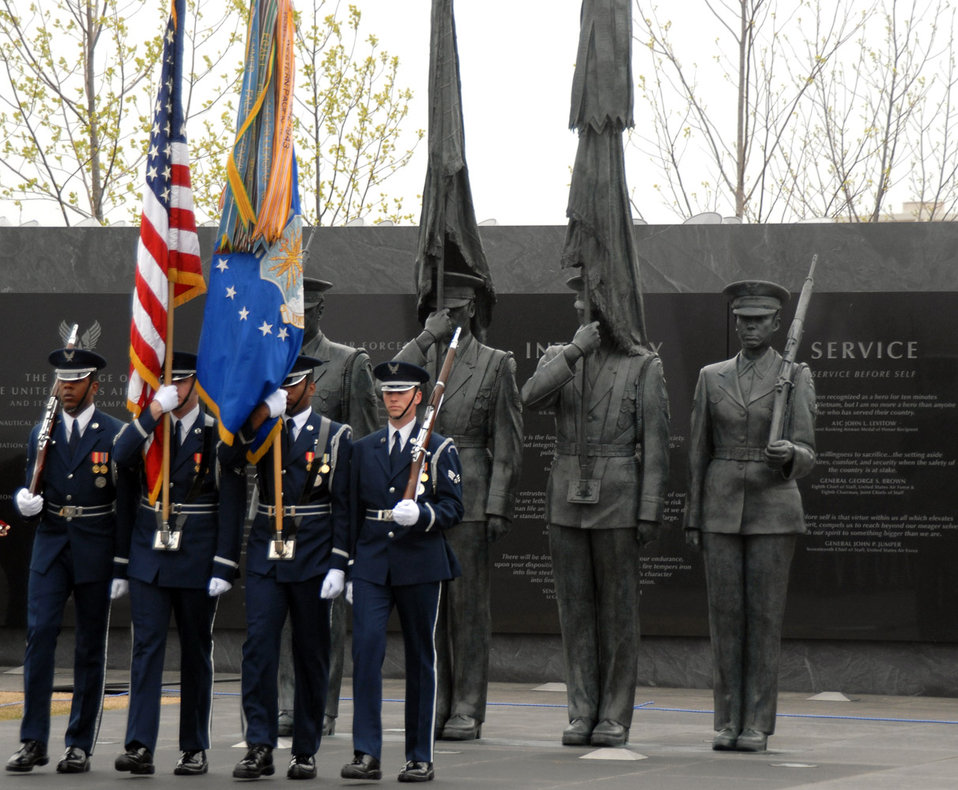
Air Force Review held at memorial

The Air Force Honor Guard presents the colors as part of the Air Force Review ceremony April 14 at the Air Force Memorial in Arlington, Va. Maj. Gen. Robert L. Smolen, the Air Force District of Washington commander, was the event host as well as the reviewing official.